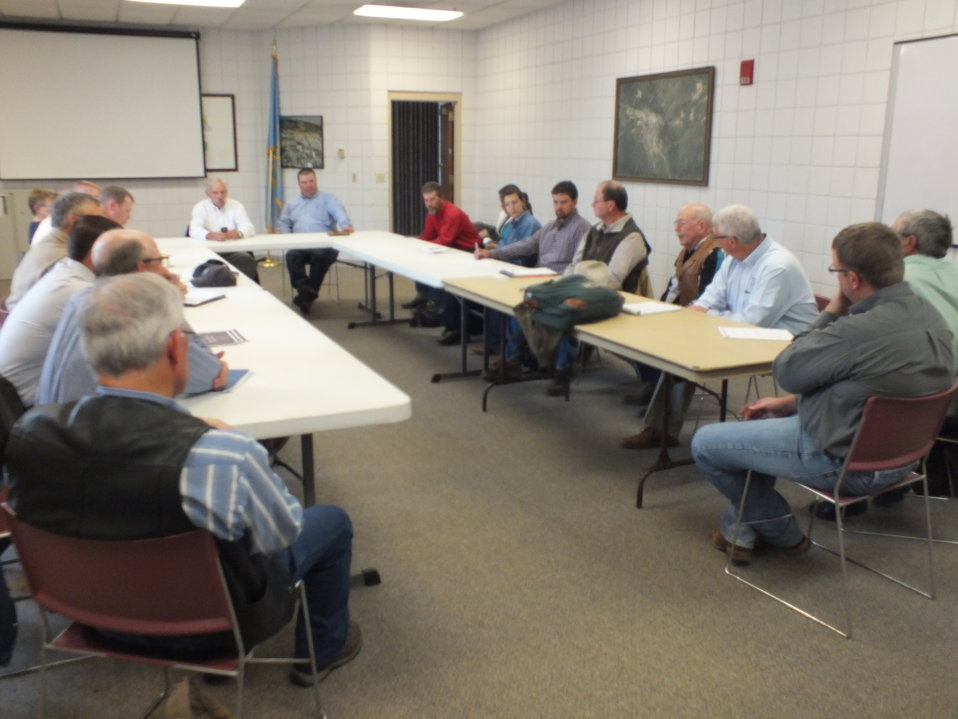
Agriculture Under Secretary for Farm and Foreign Agricultural Services (FFAS) Michael Scuse, Farm Service Agency (FSA) representatives, Natural Resources Conservation Service (NRCS) County, and State officials meet with producers after they viewed the burial pit of cattle that perished in the Atlas Blizzard. The burial pit was approximately 20-25 feet wide and 100 feet long. There were nearly 200 carcasses already in the pit, with many more to come as soil wetness conditions improve in areas that are still inaccessible by conventional methods.